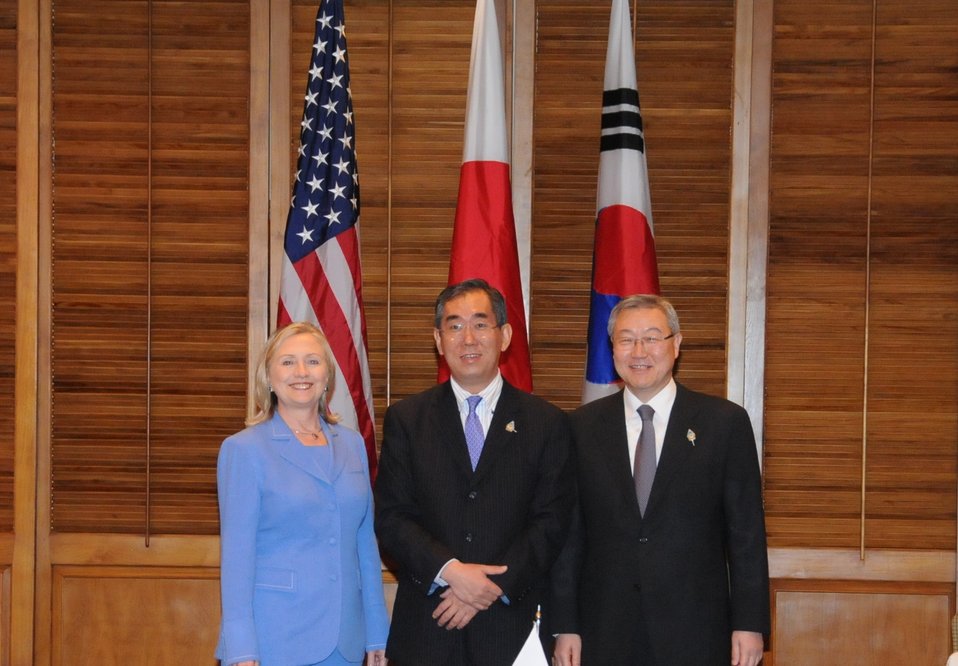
Secretary Clinton, Japanese Foreign Minister Matsumoto, and South Korean Foreign Minister Kim Sung-Hwan Pose for a Photo

U.S. Secretary of State Hillary Clinton, left, Japanese Foreign Minister Takeaki Matsumoto, center, and Foreign Minister of the Republic of Korea (ROK) Kim Sung-Hwan, right, pose for a photo before their trilateral meeting in Bali, Indonesia, on July 23, 2011.